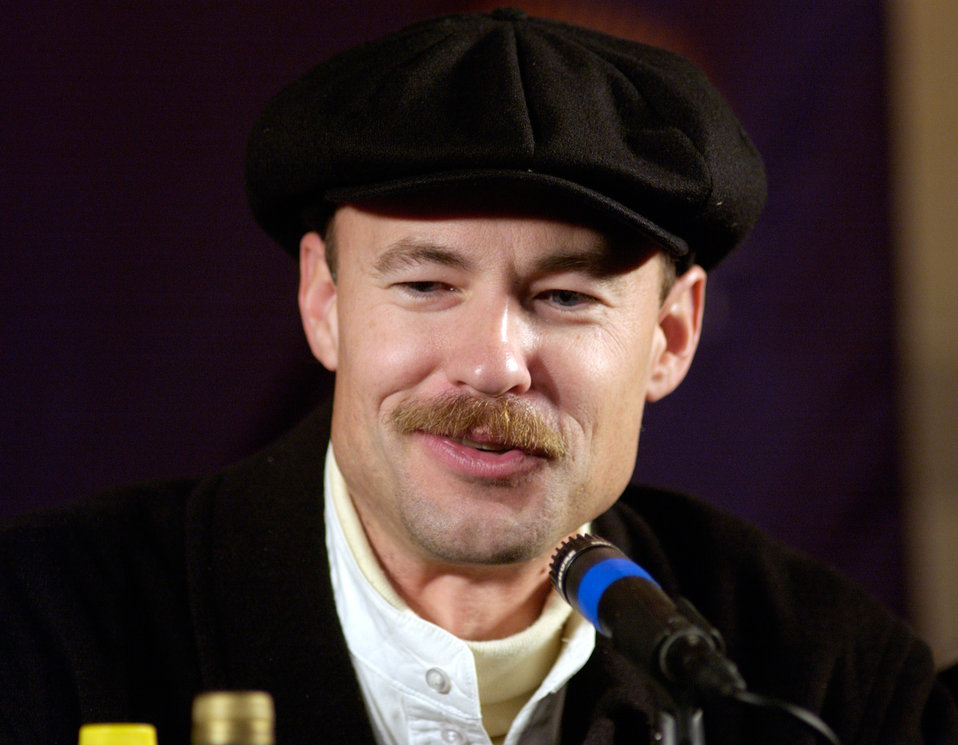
Centennial of Flight, Kitty Hawk, N.C.

KILL DEVIL HILLS, N.C. -- Pilot Kevin Kochersberger answers questions after two attempts to fly a replica of the Wright brothers' original 1903 flyer during the centennial of flight celebration here Dec. 17. More than 34,000 aviation enthusiasts braved hours of bitter cold and drenching rains at the Wright Brothers National Memorial, hoping to witness the 100th-anniversary re-enactment of the event.